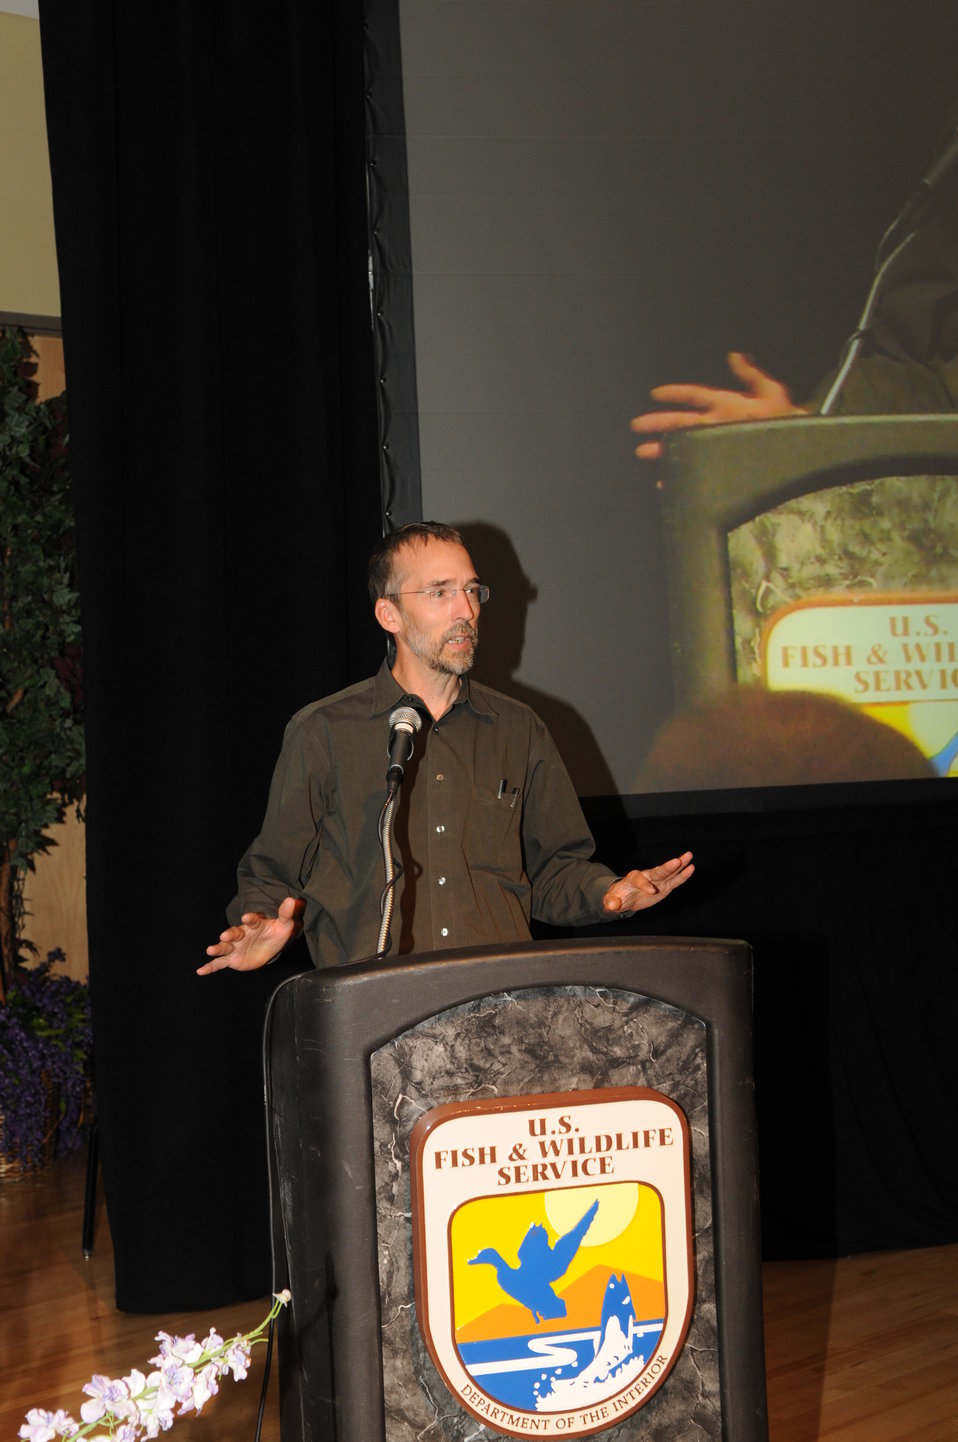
Birds in Focus Recognition

The U.S. Fish & Wildlife Service sponsored the 2012 Federal Duck Stamp Art Contest September 28 and 29 in Ogden, Utah, at Weber State University. A panel of five judges was responsible for choosing the art work used to design the 2013-2014 Migratory Bird Hunting and Conservation Stamp.